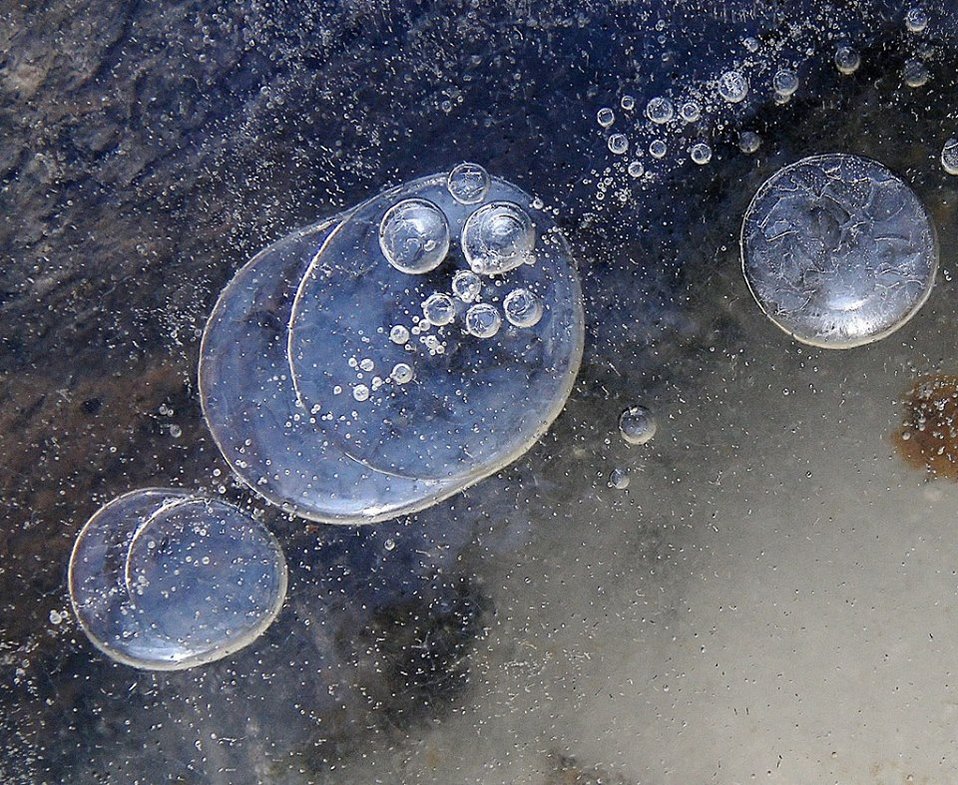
Air bubbles in ice

USFWS Midwest region